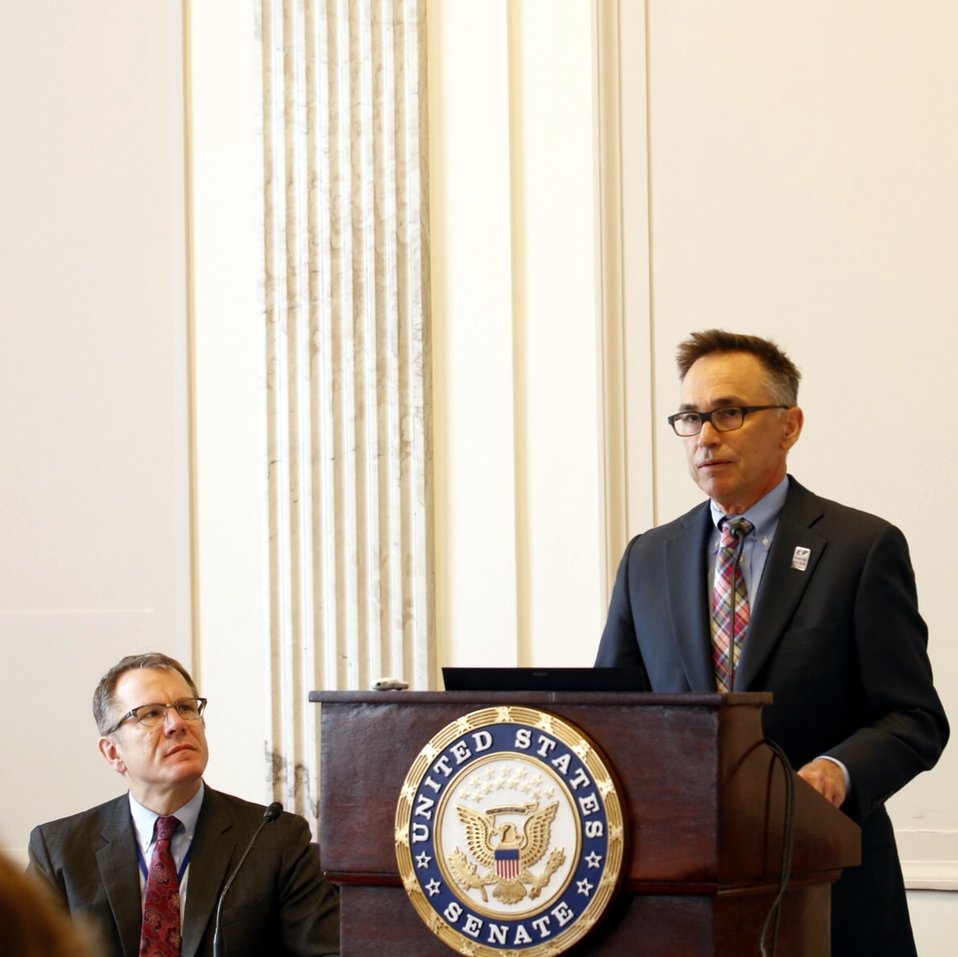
John Ward

May 9, 2014 Congressional Briefing